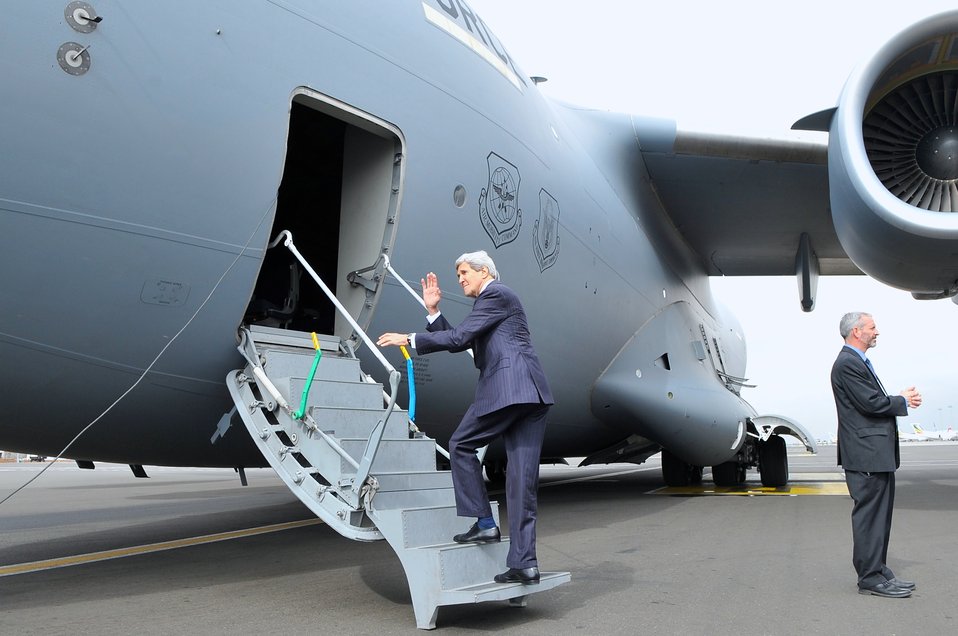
Secretary Kerry Waves As He Boards Air Force Jet Flying Him to South Sudan

U.S. Secretary of State John Kerry boards an Air Force C-17 plane for the flight from Addis Ababa, Ethiopia, to Juba, South Sudan, on May 2, 2014.